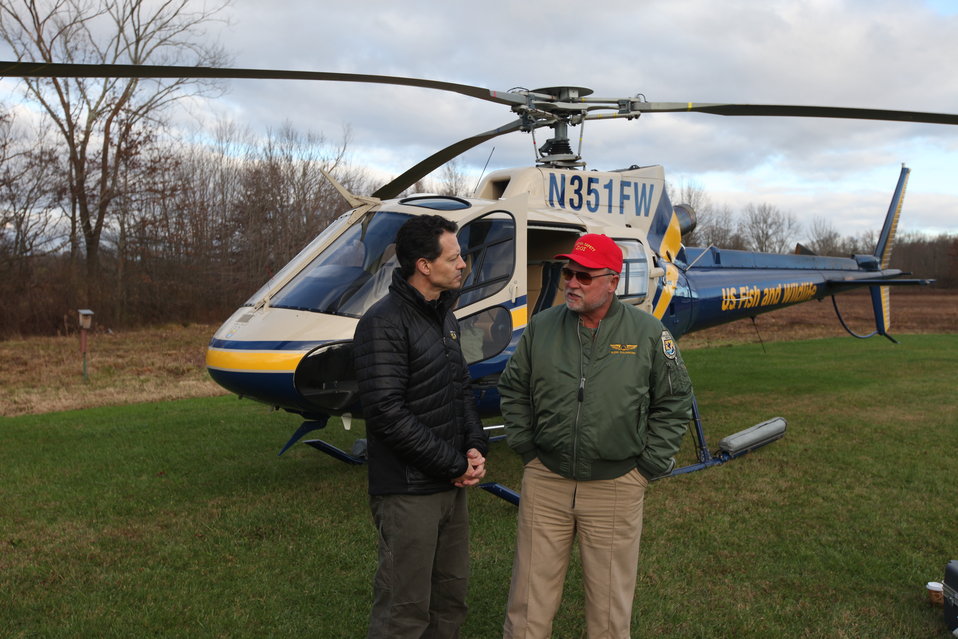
Captain Glenn Cullingford and Evan Hirsche

U.S. Fish and Wildlife Service helicopter pilot Captain Glenn Cullingford and Evan Hirsche discuss impacts to the National Wildlife Refuge system in the Northeast by storm Sandy before taking flight for an aerial survey of damage at the Great Swamp National Wildlife Refuge in New Jersey.